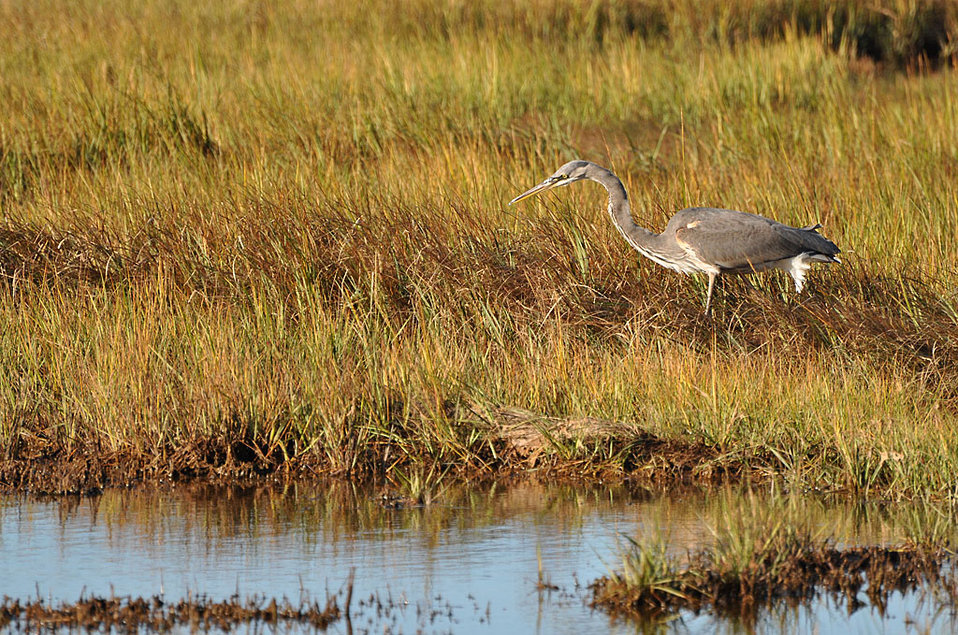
Great blue heron at Parker River National Wildlife Refuge in Newburyport, Massachusetts.